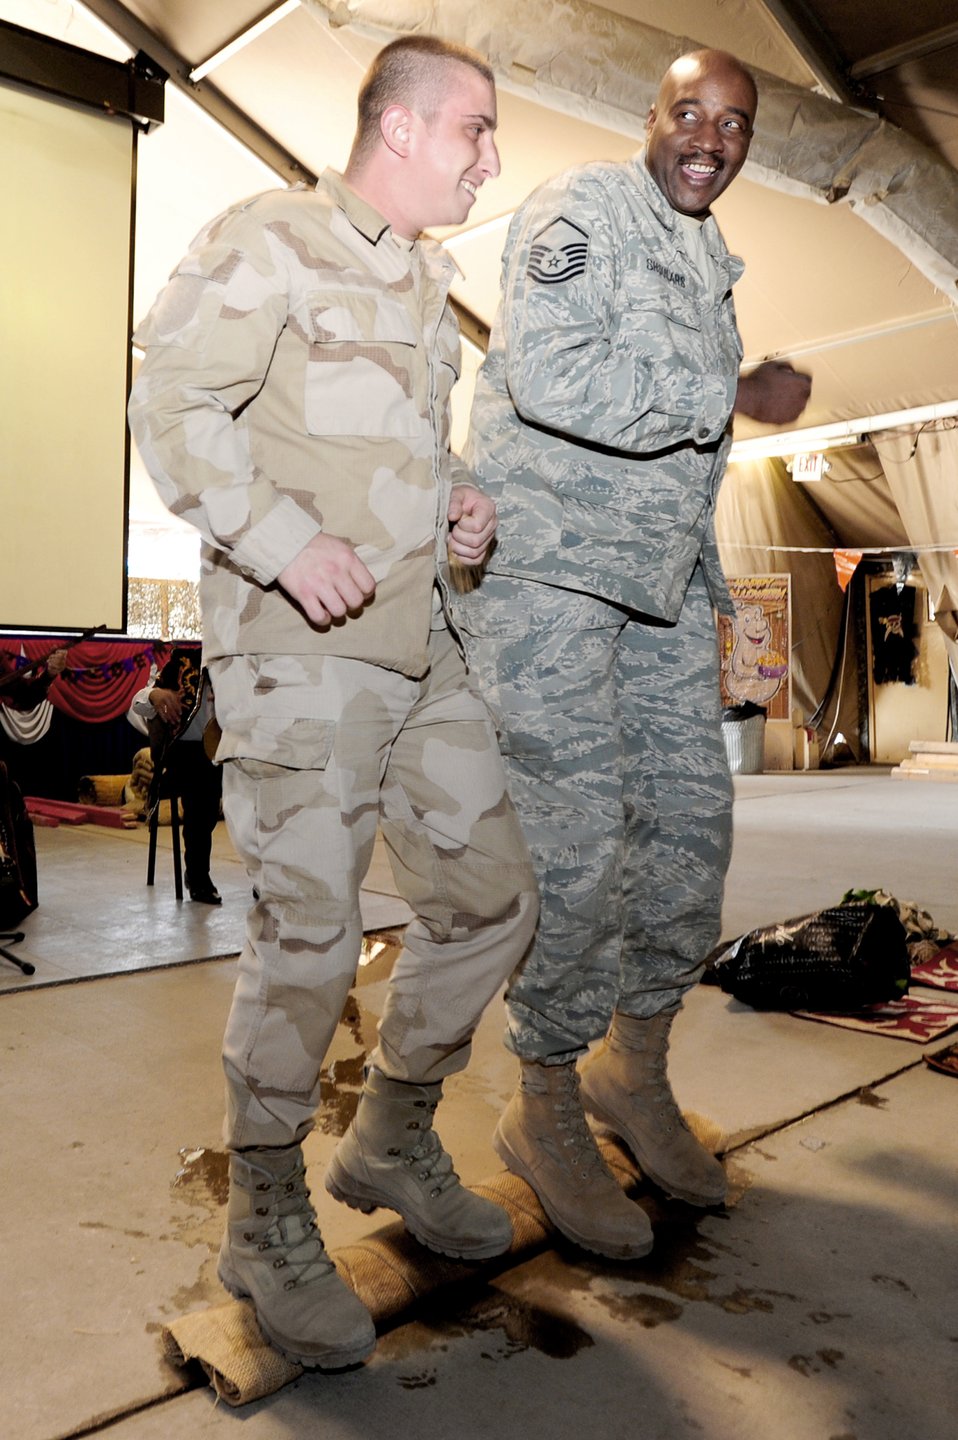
Airmen learn traditions during Kyrgyz Cultural Day

Master Sgt. John Shoulars and a Polish airman